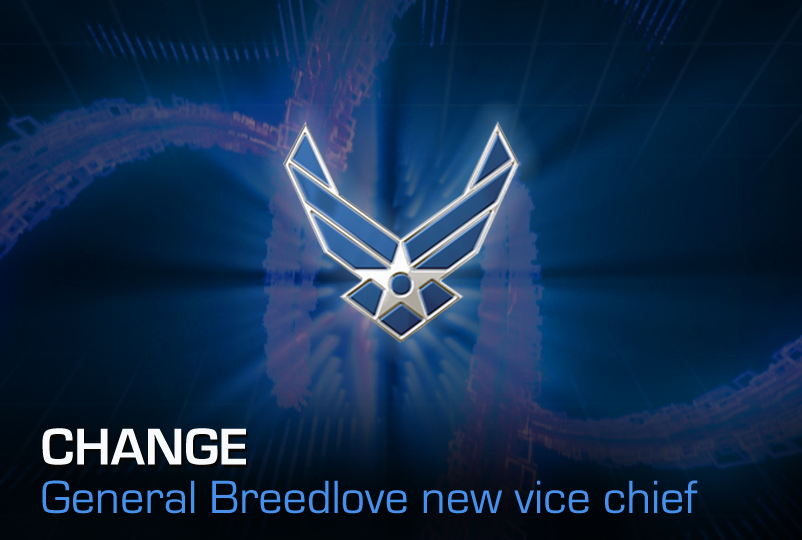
Change at the top